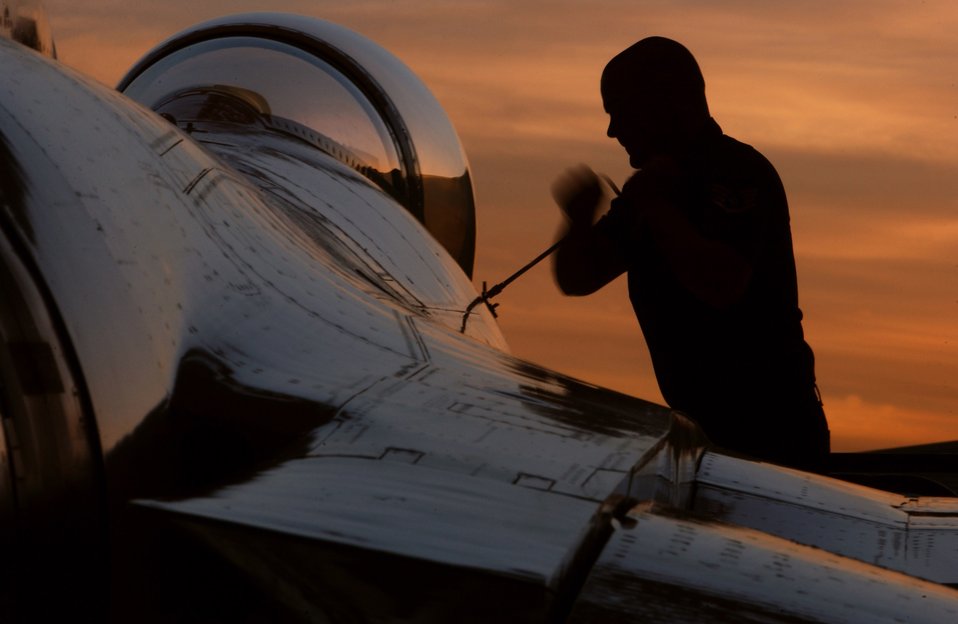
Thunderbirds

Staff Sgt. Troy Romans tightens down an F-16 Fighting Falcon canopy after a periodic inspection Jan. 9 at Nellis Air Force Base, Nev. The U.S. Air Force Thunderbirds perform more than 65 shows annually across the United States and abroad. Sergeant Romans is an an egress specialist with the U.S. Air Force Thunderbirds.